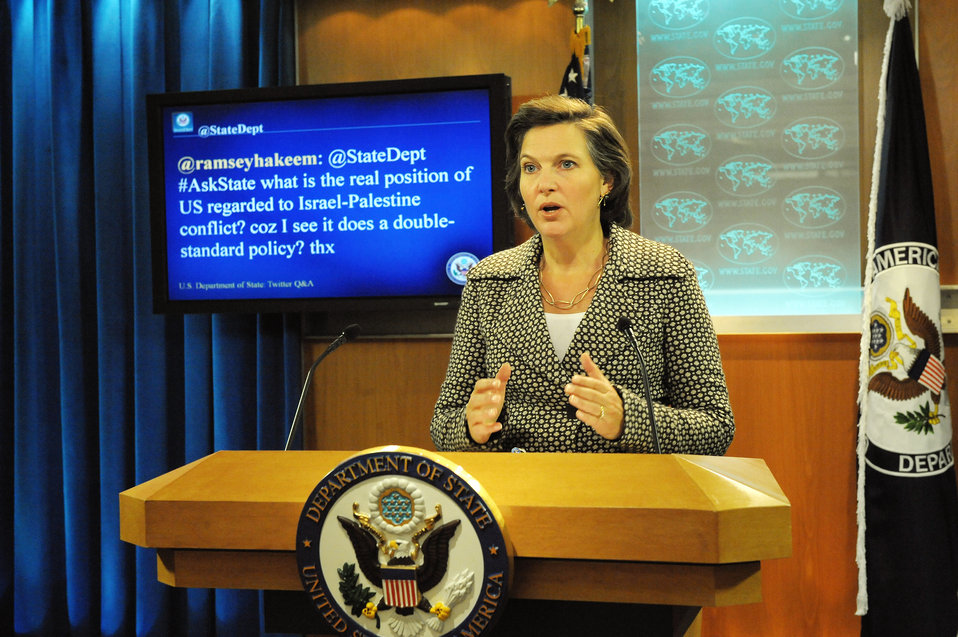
Spokesperson Nuland Responds to a Question from @StateDept

Victoria Nuland, Spokesperson for the U.S. Department of State, answers a question selected from the Department’s official English Twitter feed, @StateDept, on January 20, 2012.